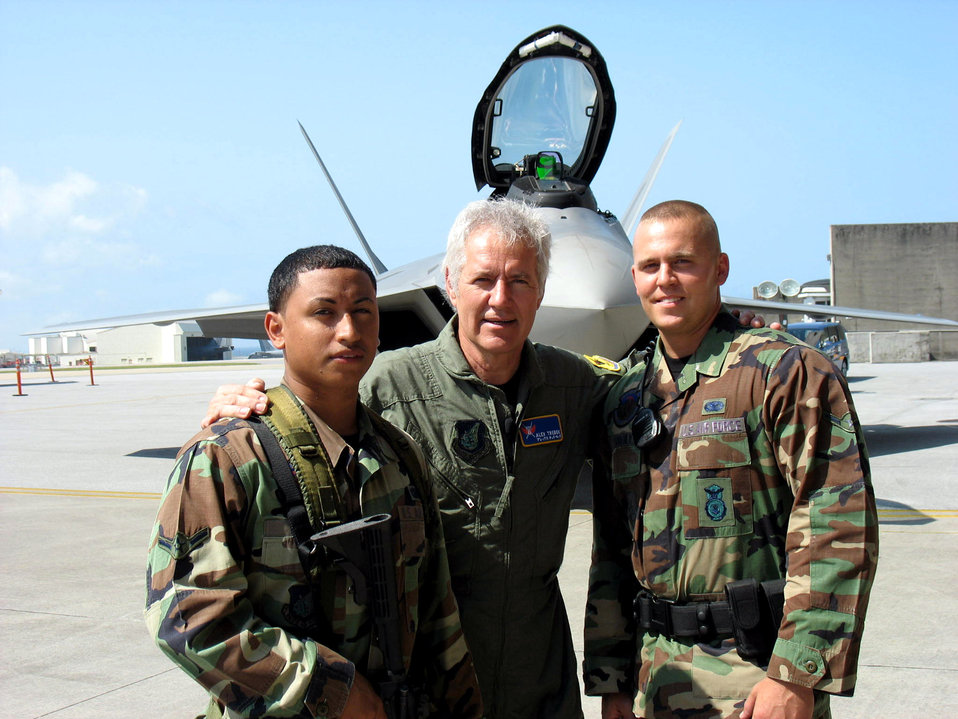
'Jeopardy' host visits Kadena Airmen

Alex Trebek poses with Airmen Jake Froehly and Adam Flores during a